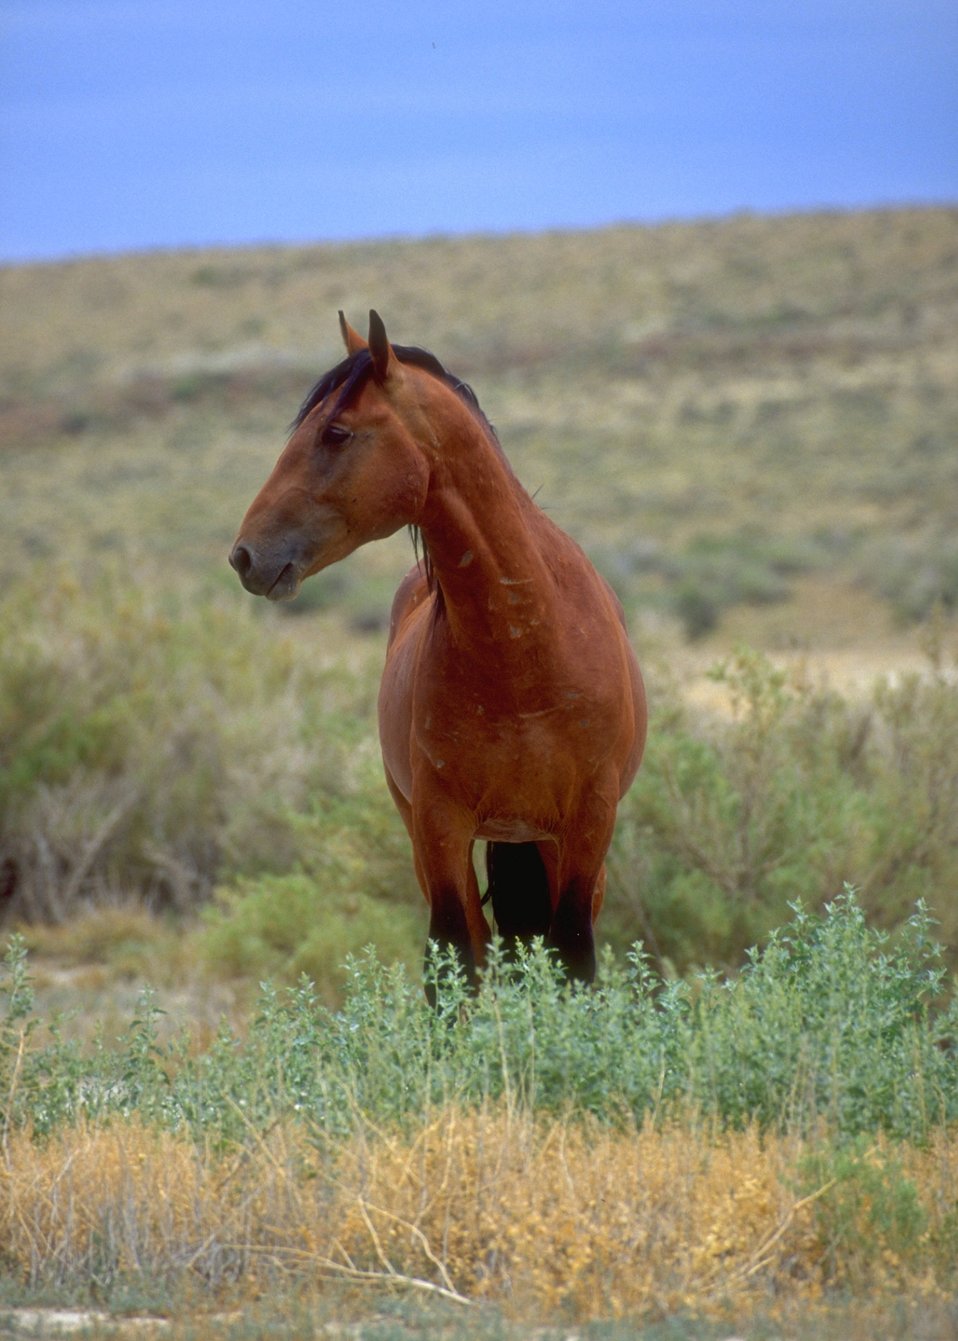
Wild horses, Rock Springs Field Office.